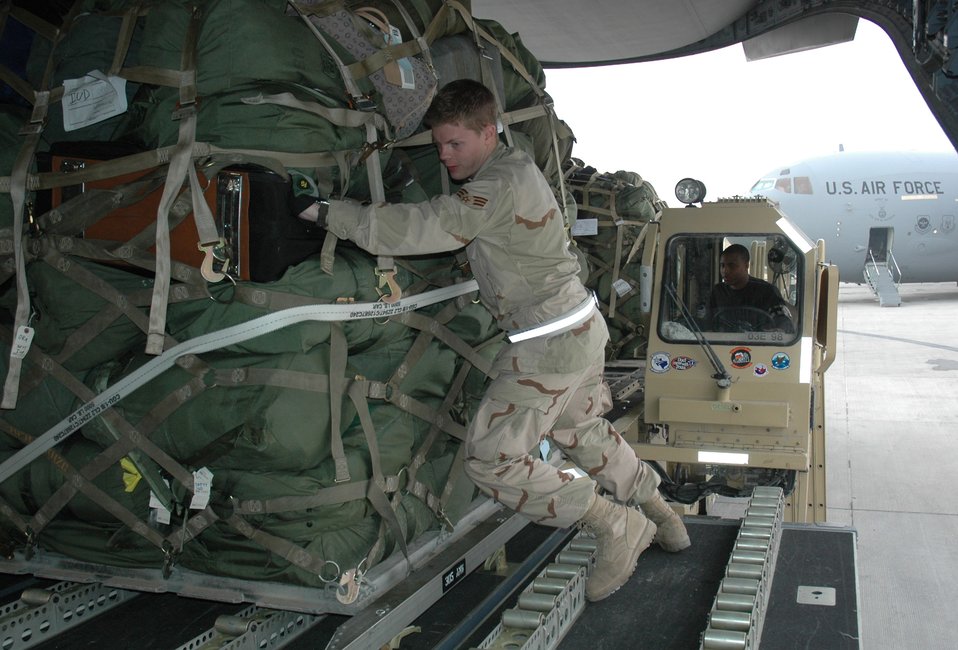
379th fights GWOT 24/7

Senior Airman Aaron Brewer helps push a pallet into a C-17 Globemaster III while Airman 1st Class Armel Trollinger operates a 60K loader. Both are aerial porters assigned to the 8th Expeditionary Air Mobility Squadron.